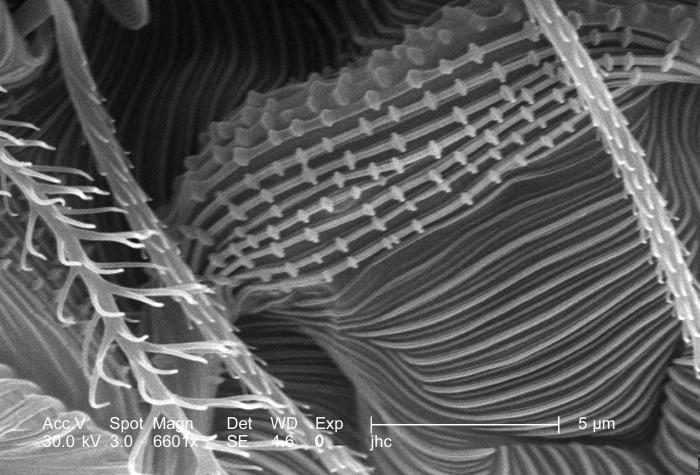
Under a high magnification of 6601x, this scanning electron micrograph (SEM) revealed the presence of numbers of mites from the specie Nanorchestes sp., Family Nanorchestidae, which was highly festooned with an adornment of chitinous exoskeletal outcroppings. Under this high magnification, these exoskeletal complexities were better appreciated in their diaphanous majesty. Members of this specie are free-living, fungivorous soil and leaf-litter/moss mites that were simply an incidental finding on the skin of this lizard. It is not a lizard associate per se, and certainly not parasitic.